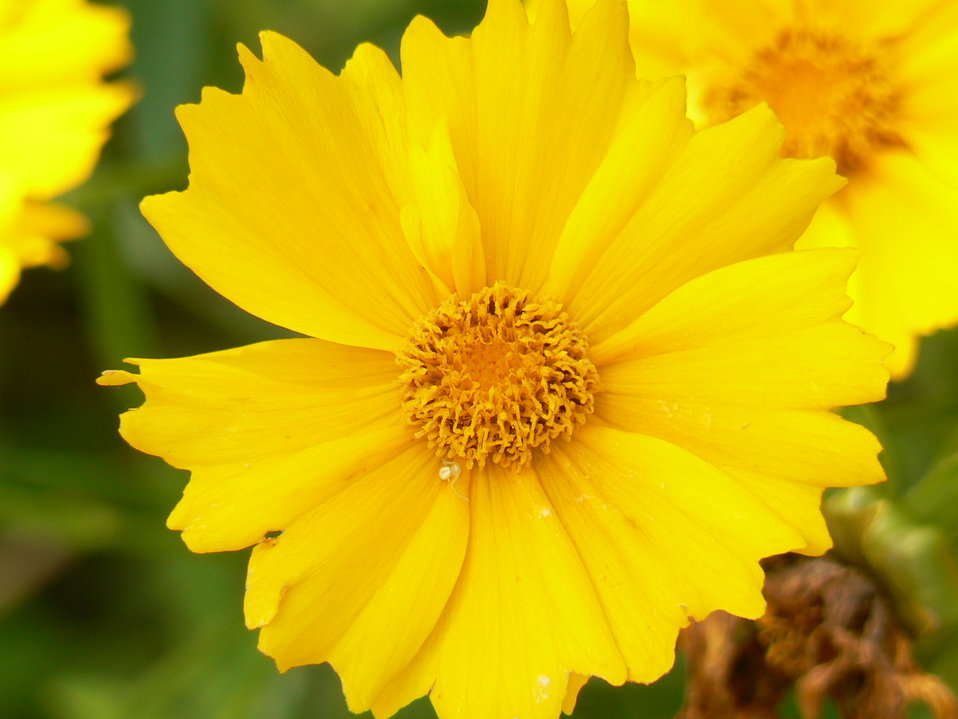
Coreopsis at Cape May National Wildlife Refuge.